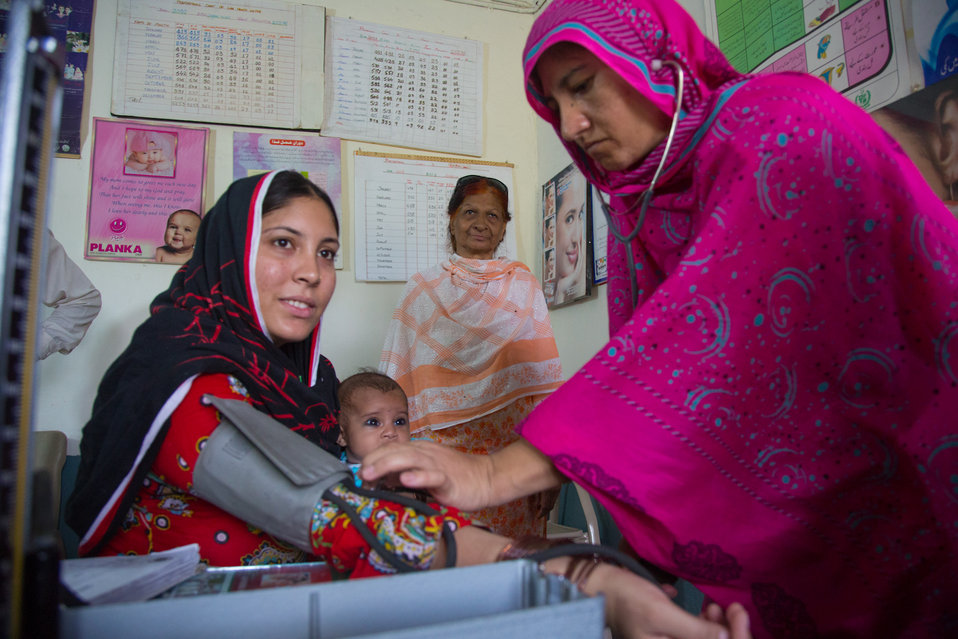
untitled-5577

BHO (Basic Health Unit), Dogran Kalan Union Counsil, Wagah, Punjab Province, Pakistan::: Client: Tahira Rashid. Dr. Fauzia Amin FMO (Female Medical Officer)